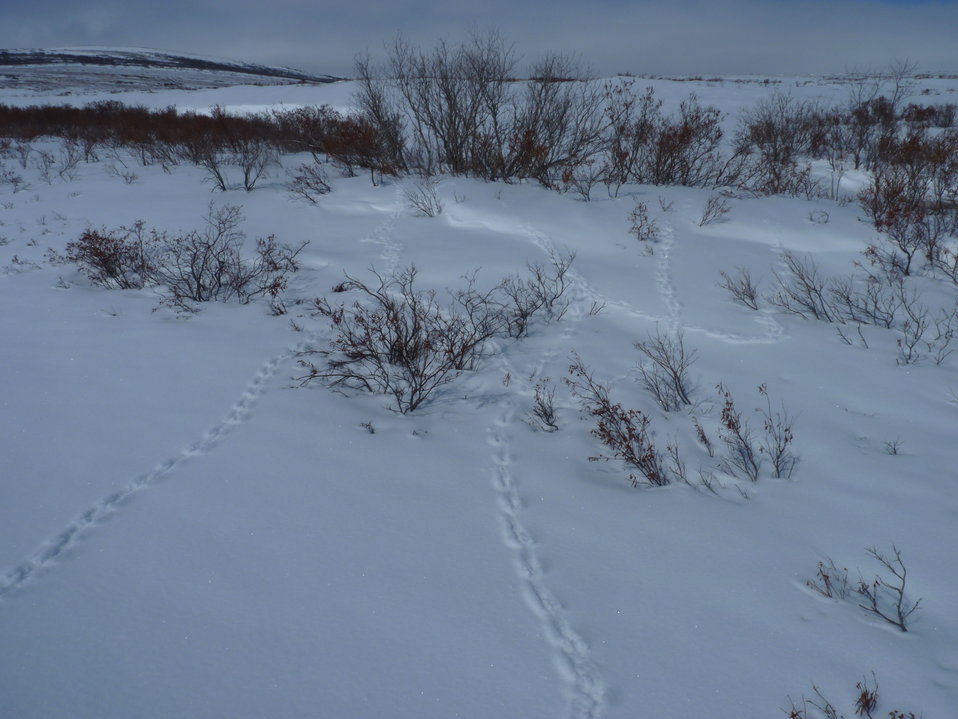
Weasel tracks

Andreafsky Wilderness, Yukon Delta National Wildlife Refuge